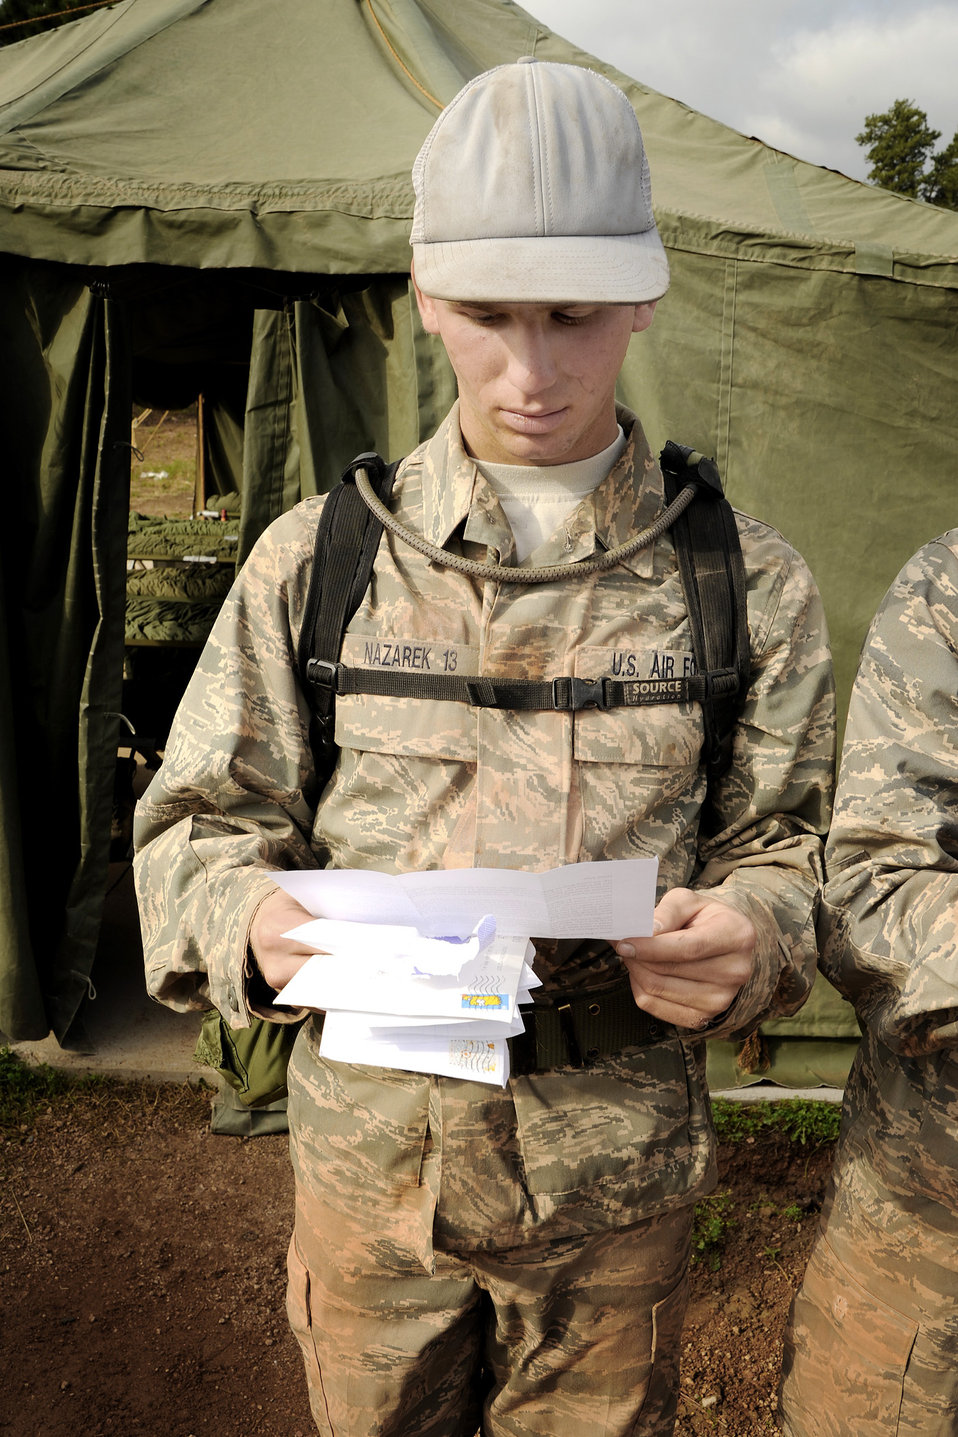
Academy basic field training at Jacks Valley

Air Force Academy Basic Cadet Kyle Nazarek enjoys mail call during a break at Jacks Valley near Colorado Springs, Colo., July 21. Basic cadet training started June 25 and continues through Aug. 1.